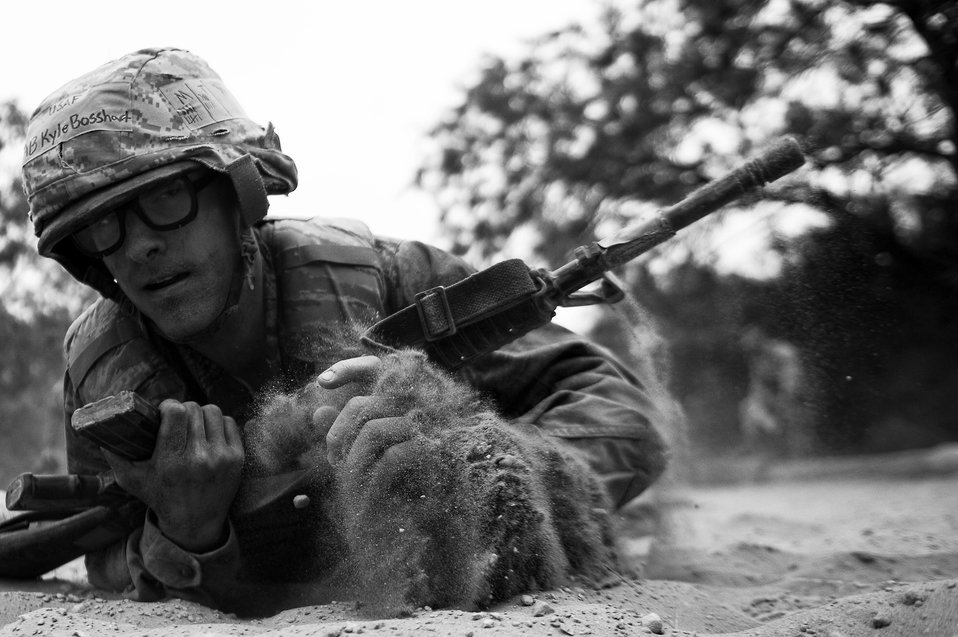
BEAST

Basic trainees go through their sixth week of Air Force basic military training at the Basic Expeditionary Airman Skills Training on May 25, 2011, at Lackland Air Force Base, Texas.